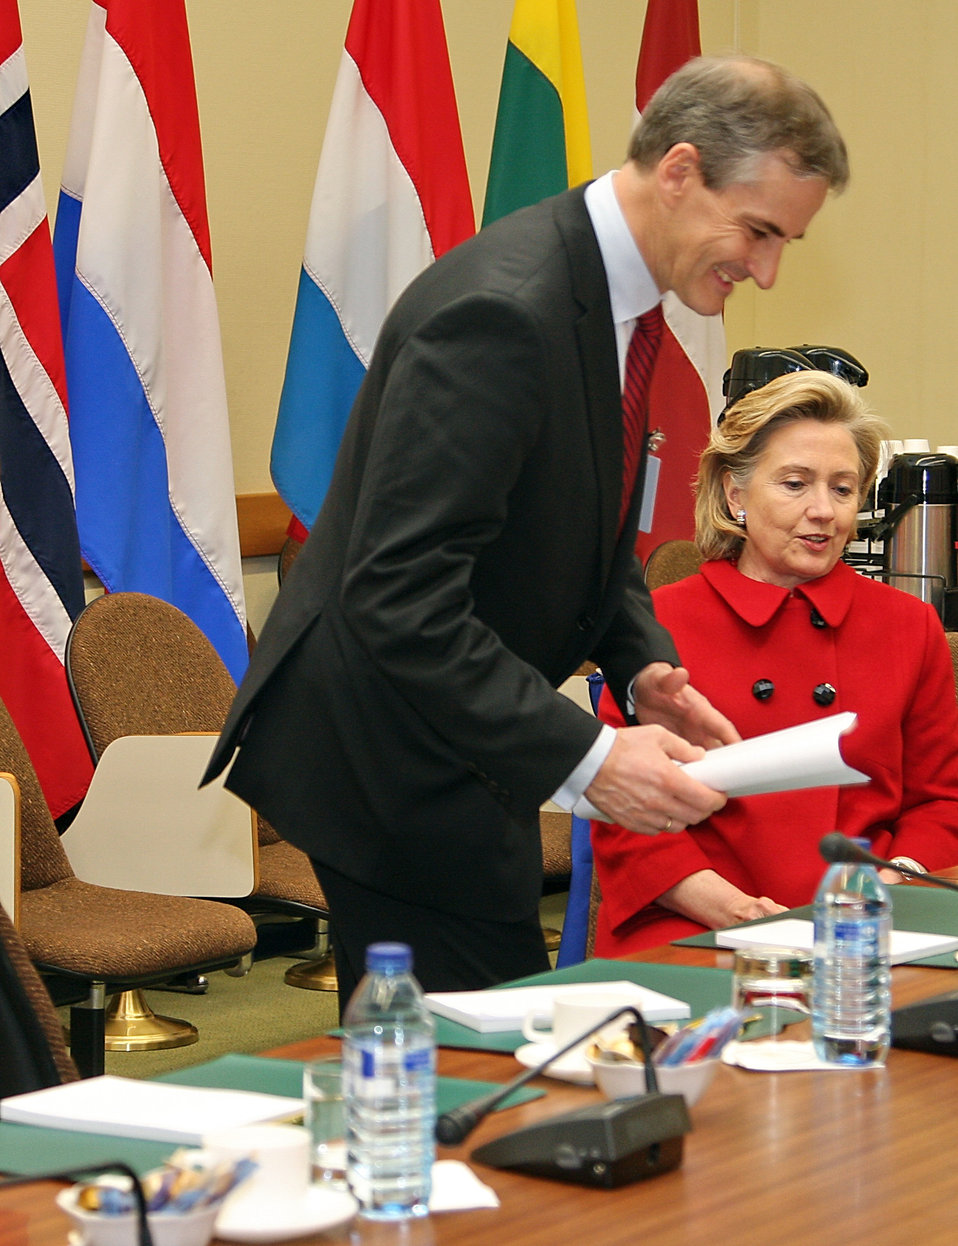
Secretary Clinton Meets With Norwegian Foreign Minister

U.S. Secretary of State Hillary Rodham Clinton holds a bilateral meeting with Norwegian Foreign Minster Jonas Gahr Stoere in Brussels, Belgium December 4, 2009.